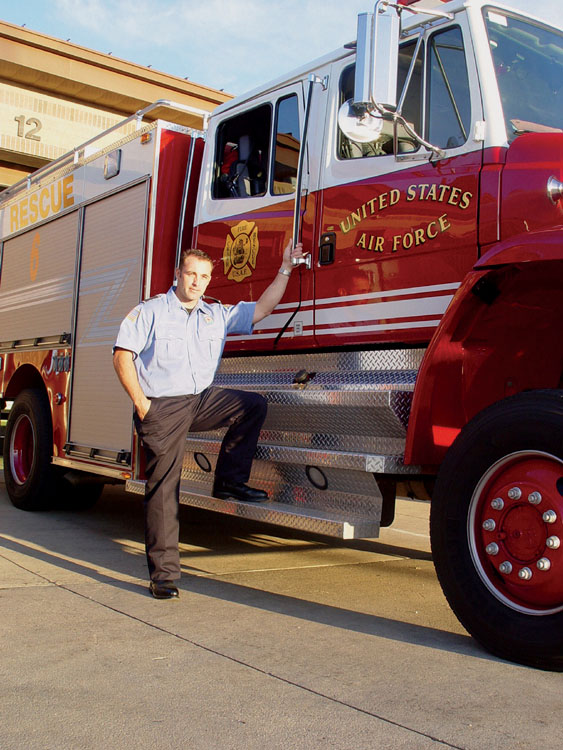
McConnell firefighter saves eight lives

MCCONNELL AIR FORCE BASE, Kan. -- Bradford Voorhees continues his rescue mission on and off duty. A firefighter here for more than four years, Mr. Voorhees was the first on scene when a van drove off a highway and then rolled over twice, injuring five children and three adults. He is assigned to the 22nd Civil Engineer Squadron.